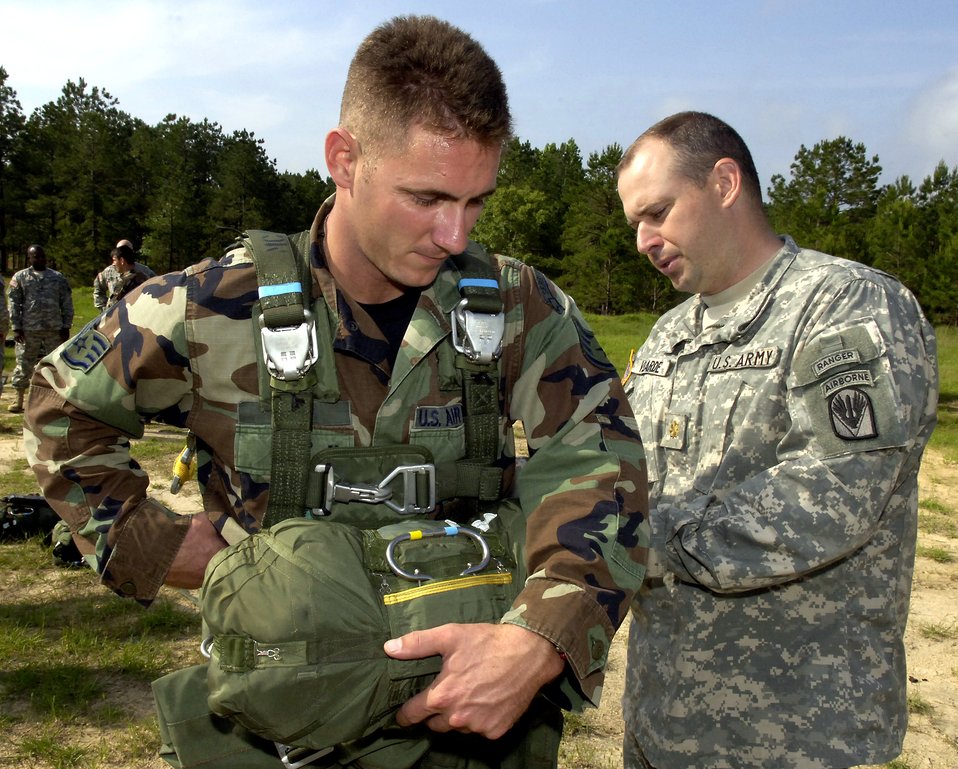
Special ops training

Staff Sgt. Reed (left) waits as Army Maj. Brian Velarde inspects his parachute at the Joint Readiness Training Center at Fort Polk, La., on Wednesday, May 3, 2006. Sergeant Reed, a survival, evasion, resistance and escape specialist, jumped with Soldiers in special operations training to complete static-line parachute training.